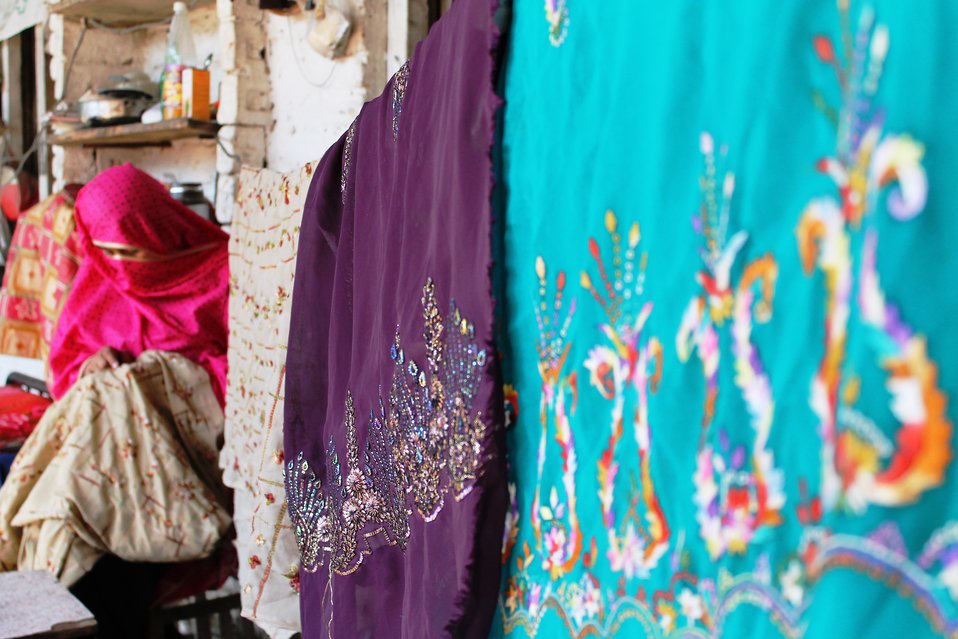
Embellished Fabrics Value Chain Development Initiative under the USAID's Entrepreneurs Project

Swat, October 18, 2012: Through regular training sessions and group works, USAID's Entrepreneurs Project is helping preserve the indigenous craft of hand embellishment, empowering women, and offering a practical model for sustainable development in Pakistan’s hand embellished fabric sub sector.